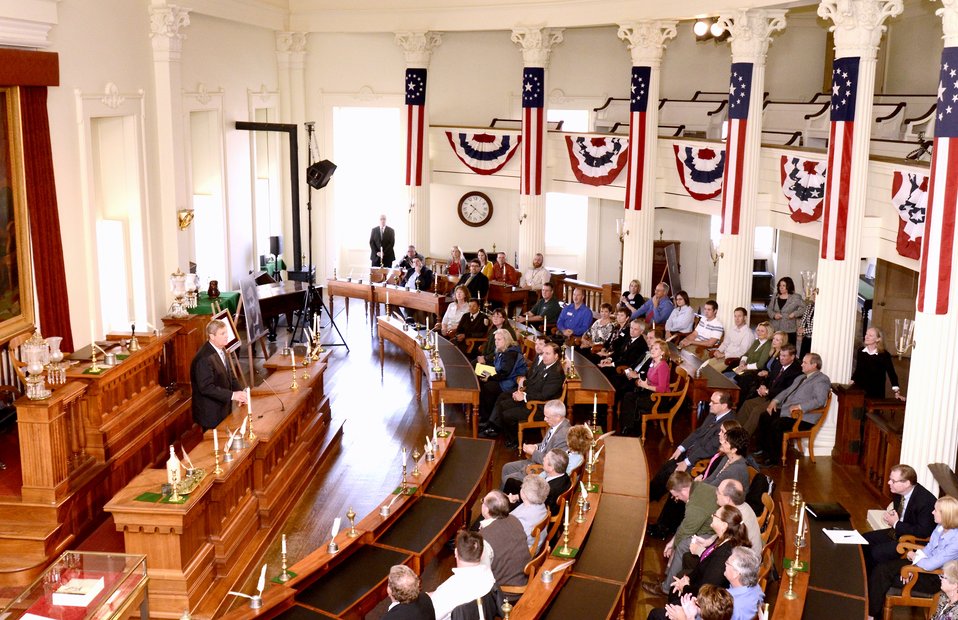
Agriculture Secretary Tom Vilsack speaking at the Old State Capitol in Springfield, IL, to commemorate the 150th Anniversary of the creation of the U.S. Department of Agriculture on Wednesday, November 2, 2011.